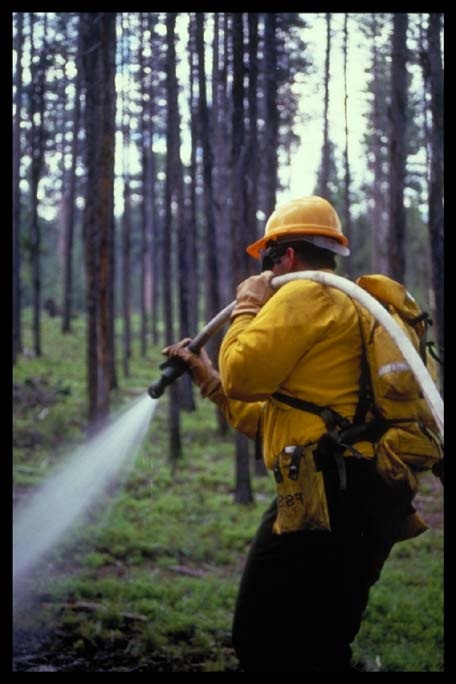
Engine crewmember